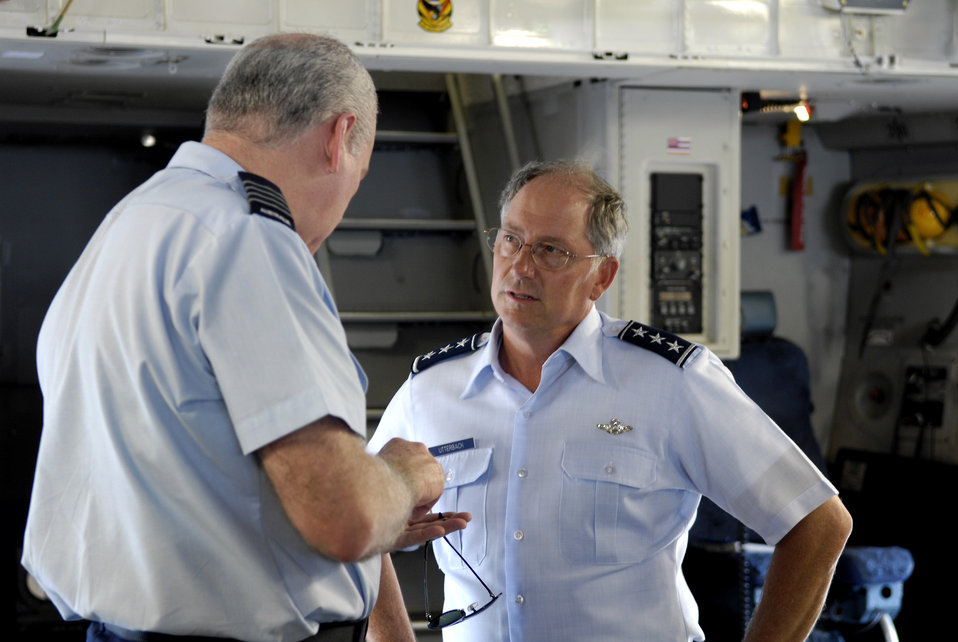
Pacific conference builds enlisted forces

Lt. Gen. Loyd S.